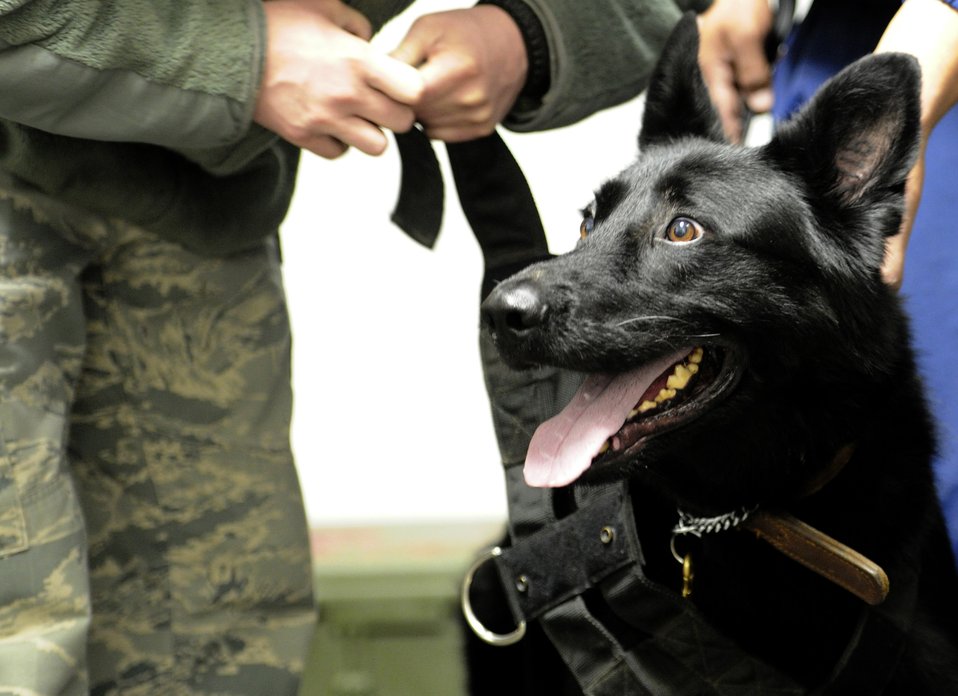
Building loyalty and trust

Staff Sgt. Erick Martinez straps a harness onto Argo II March 4, 2011, at Hill Air Force Base, Utah. Sergeant Martinez, a military dog handler, is preparing to take Argo II through an exercise designed to build loyalty, trust and teamwork.